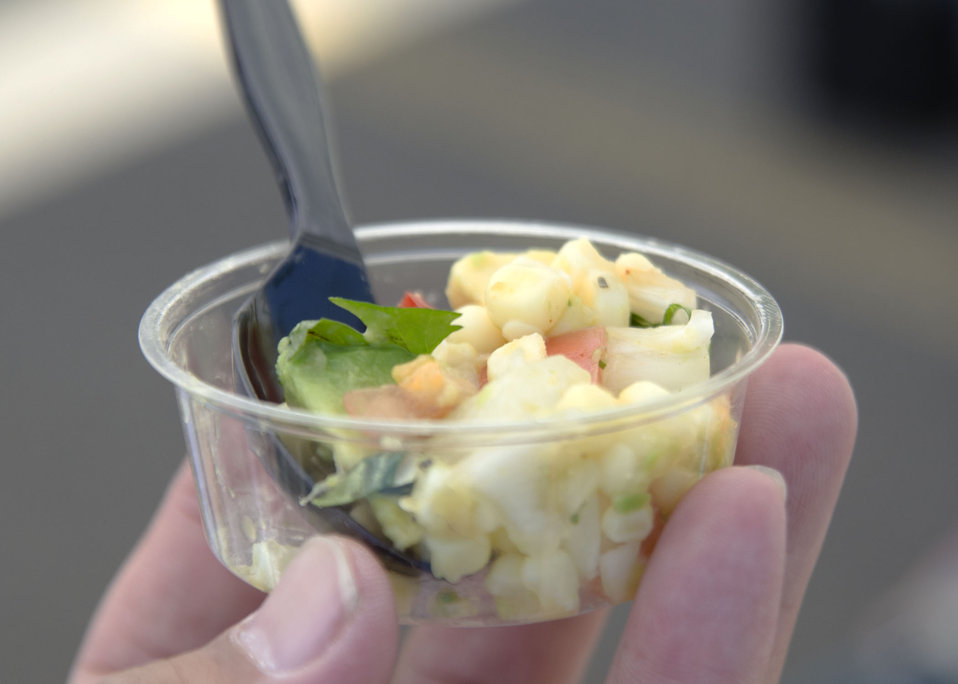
Kid Chef Lily Gravitz, 12, prepares Mexican inspired corn salad during her cooking demonstration at the U.S. Department of Agriculture Farmers Market, located in Washington, DC, Friday, July 1, 2011.